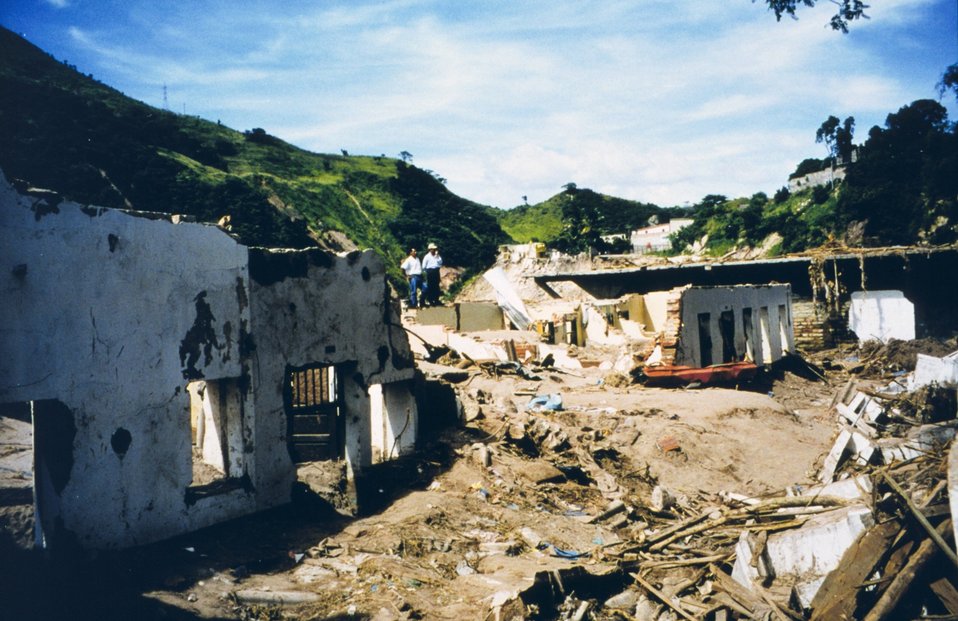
Flood damage along the Choluteca River caused by Hurricane Mitch. Over 9,000 deaths and 9,000 missing were attributed to Mitch making it the second most deadly hurricane in history ranking only below a 1780 hurricane in the Lesser Antilles.